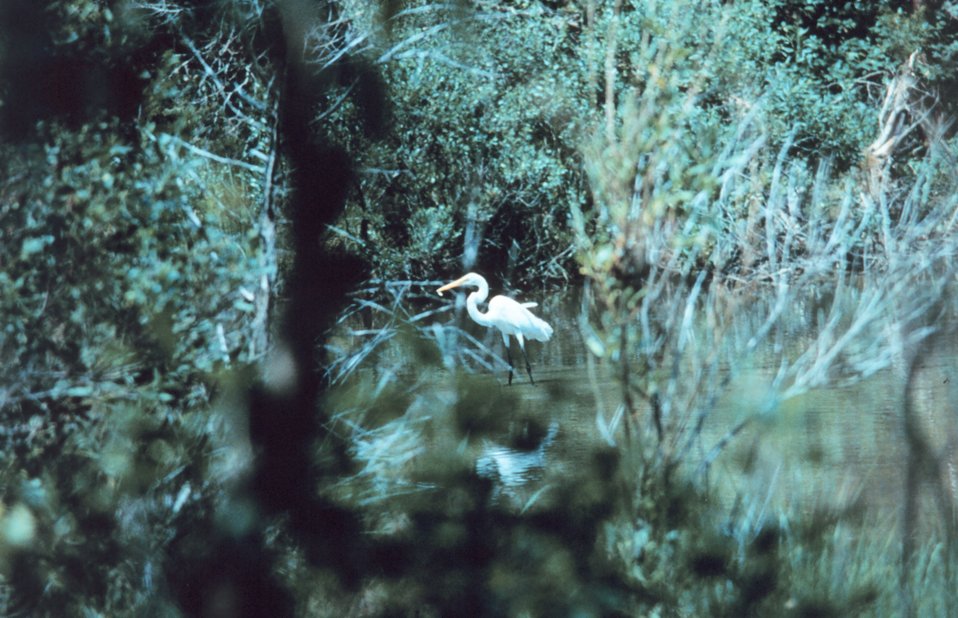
An egret fishing in a tidal pond